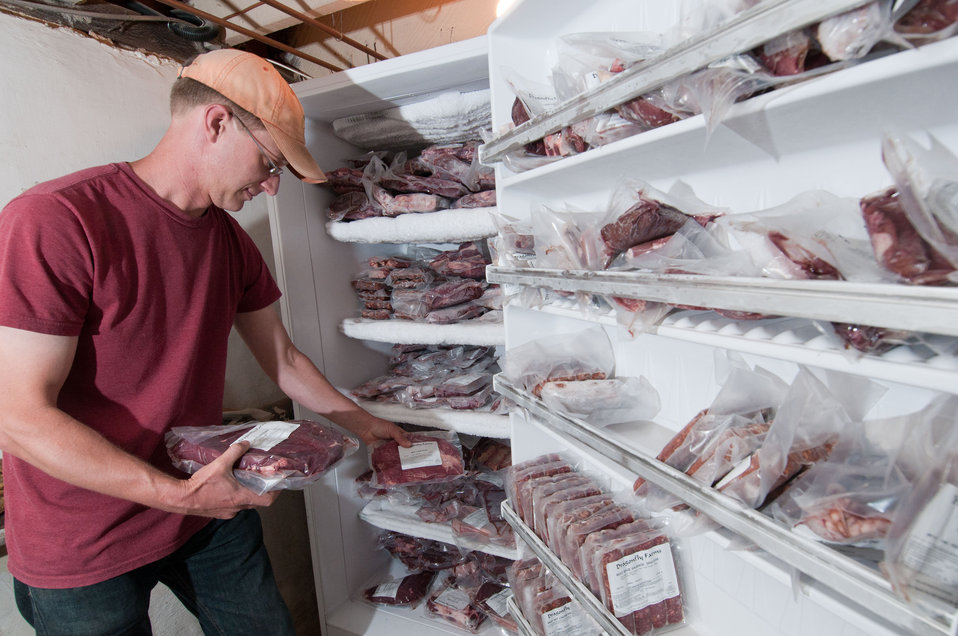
Bruce Johnson, owner of the Dragonfly Farm inventories beef that was produced from his free-range, grass-fed, and very stress-free cattle in Beaverdam, VA, on Friday, May 6, 2011. Dragonfly and other farms produce meat products that are listed and ordered on Lulus Local Food website. The products are distributed with the help of other suppliers participating with Fall Line Farms Food Hub. Together, they offer a wide variety of household food staples and specialty items. Members pick their customized orders from an ever changing seasonal inventory of fruits, vegetables, meats, soaps, eggs, cheeses, flowers, honey, pastas, sauces, syrups, baked goods, mushrooms, flour and grains from the Richmond, VA area.